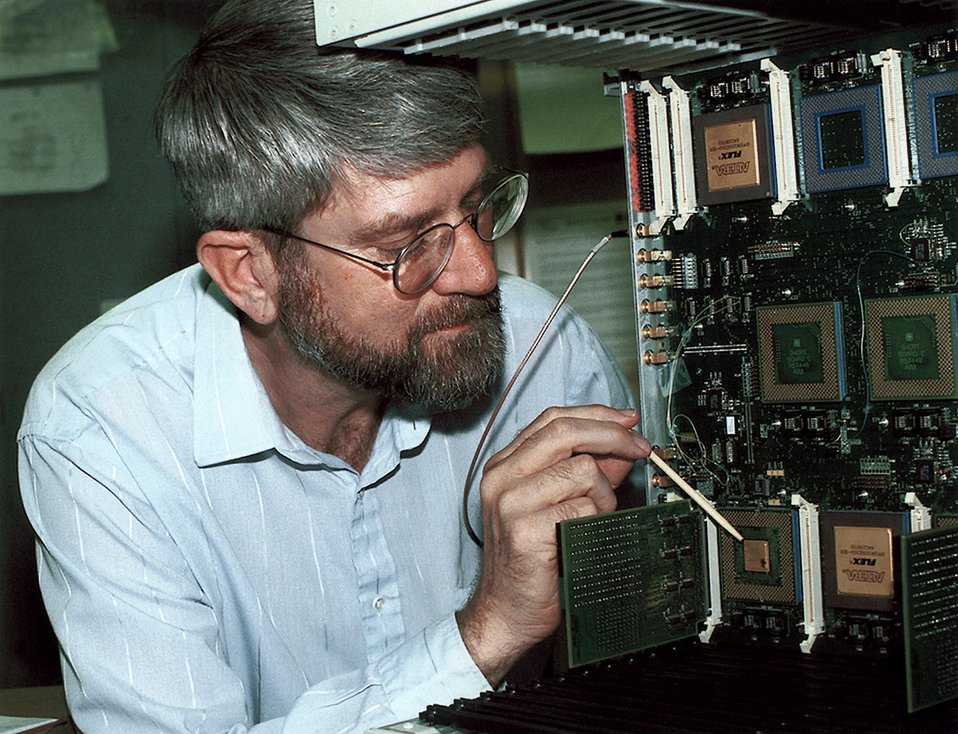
SANDIA SCIENTIST POINTS TO UNCLASSIFIED ENCRYPTOR CHIP, WORLD'S FASTEST ENCRYPTION DEVICE.

THE DEVICE, DEVELOPED AT SNL, ENCRYPTS DATA AT MORE THAN 6.7 BILLION BITS PER SECOND-----10 TIMES FASTER THAN ANY OTHER KNOWN ENCRYPTOR. IT IS MEANT TO PROTECT DATA BEING TRANSMITTED FROM SUPERCOMPUTERS, WORKSTATIONS, TELEPHONES, AND VIDEO TERMINALS. THE DEVICE WAS NOMINATED FOR A 1999 R&D 100 AWARD.